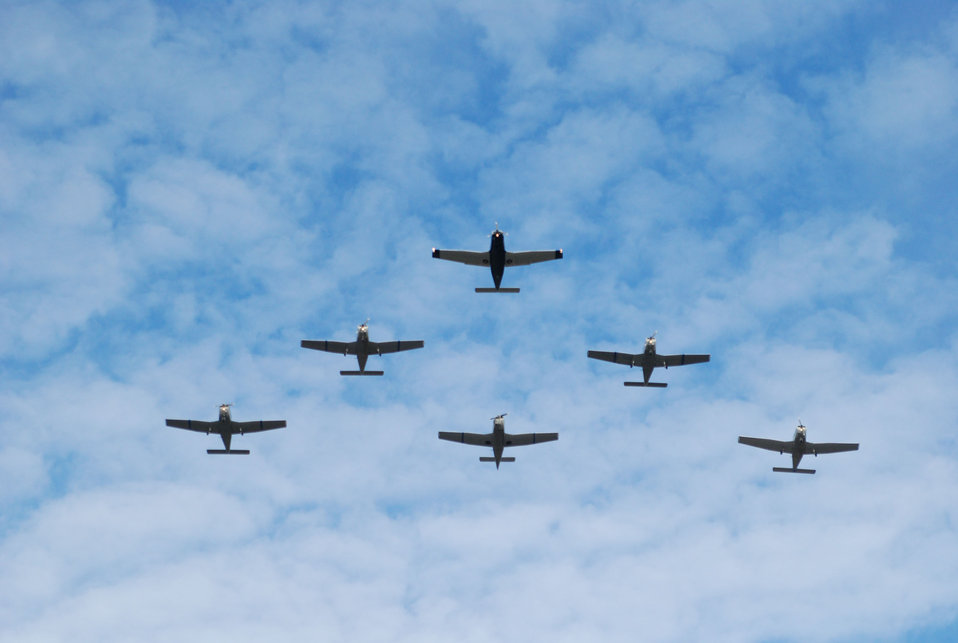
Wright Brothers

A 6-ship formation of Wright-Patterson Air Force Base, Ohio, Aero Club aircraft performs a flyover Dec. 17, 2009, during a ceremony marking the 106th anniversary of the Wright brothers' first powered flight. Flight lead was retired Lt. Col. R. Kevin Adams, the Aero Club's safety officer and formation flight program manager. The event took place over the Wright Brothers Memorial, part of the Dayton Aviation National Historical Park.